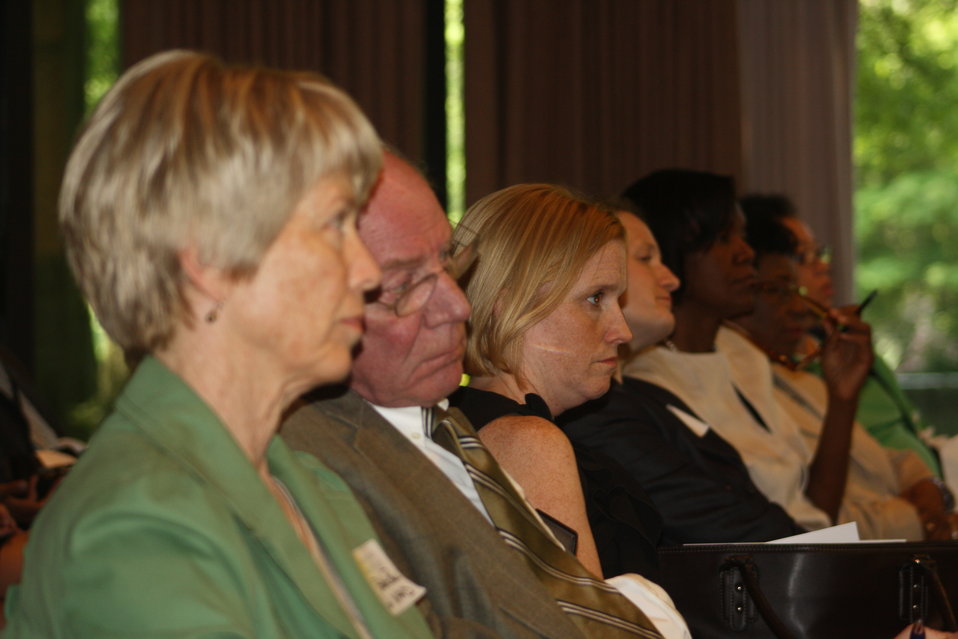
Faith-Based and Neighborhood Partnership launch at Atlanta's Carter Center